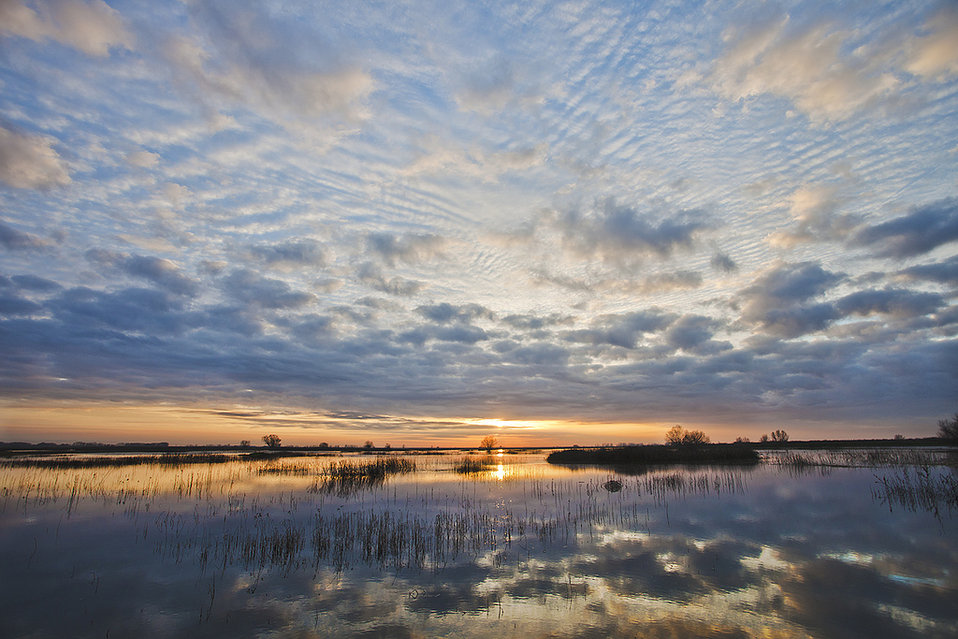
February

sunset
Merced National Wildlife Refuge, CA